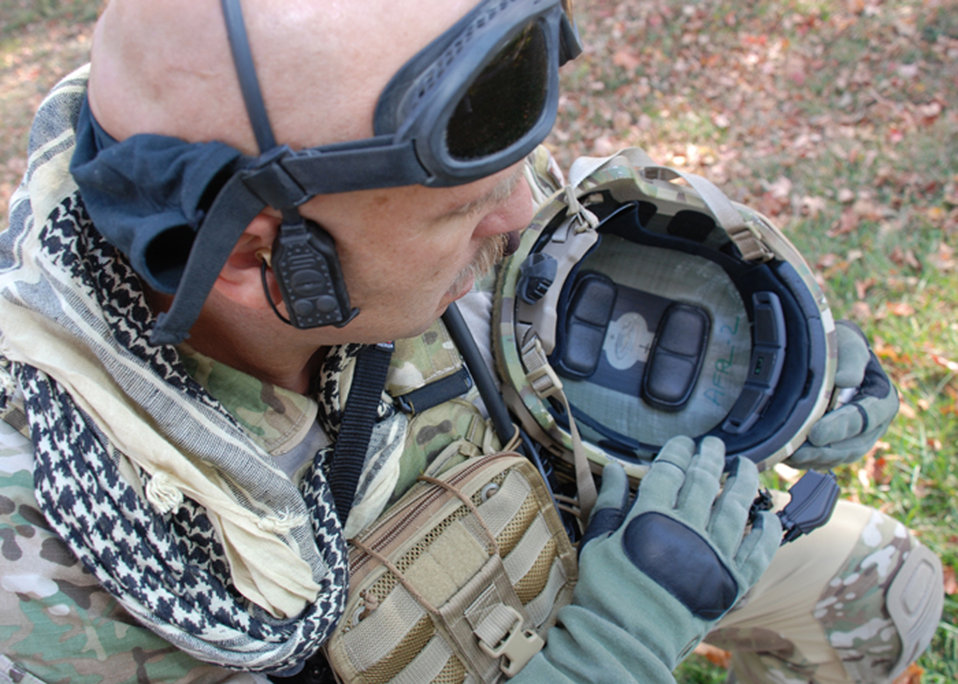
BALSM

Master Sgt.Robert Bean inspects the wireless pulse oximetry sensor in the front of his helmet, Oct. 12, 2010. The sensor is part of the Battlefield Automatic Life Status Monitor being developed by QinetiQ in coordination with the Human Effectiveness Directorate. Sergeant Bean is from the Air Force Materiel Command Aeronautical Systems Command, Battlefield Airman Branch.